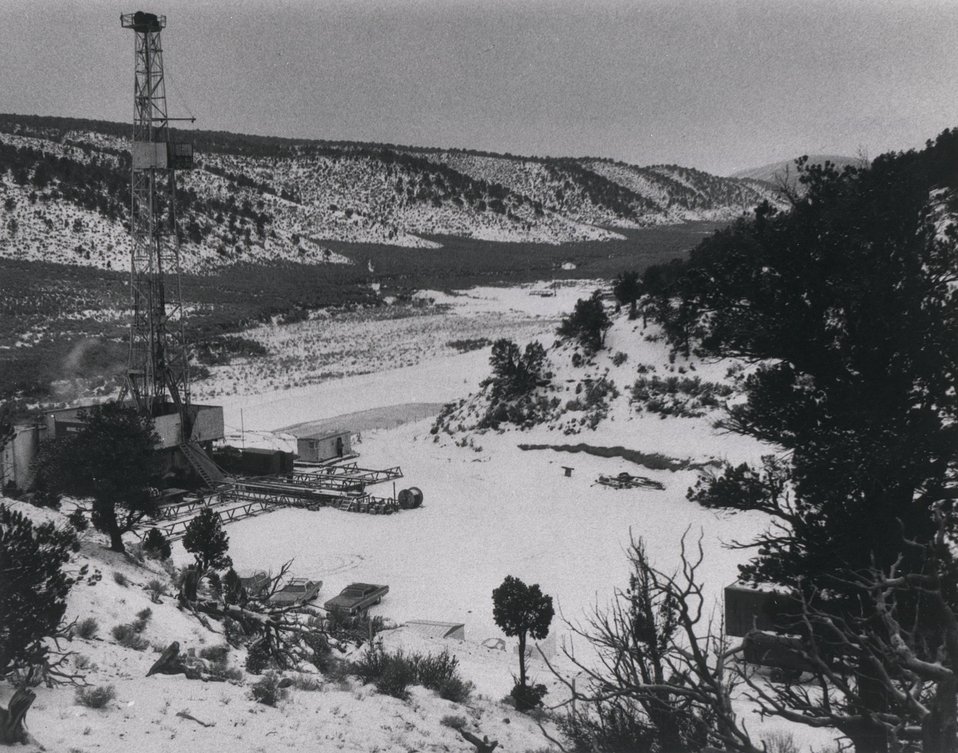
Drilling has been completed for a 1973 joint AEC-CER Geonuclear, Inc., peaceful underground nuclear gas simulation explosives test, Project Rio Blanco. Circa 1973.